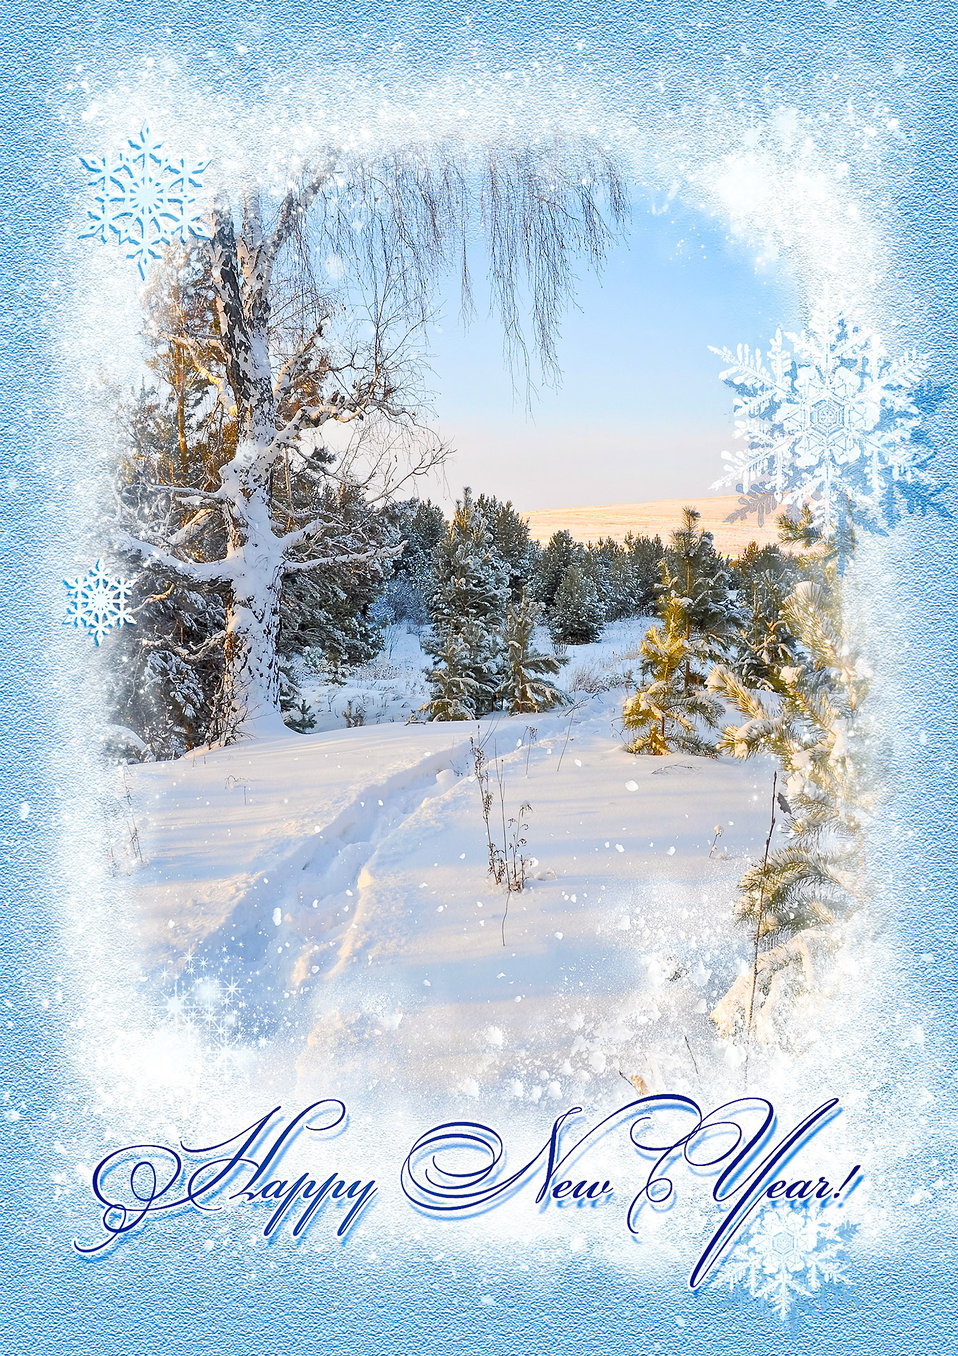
Happy new year!

Card with new year.